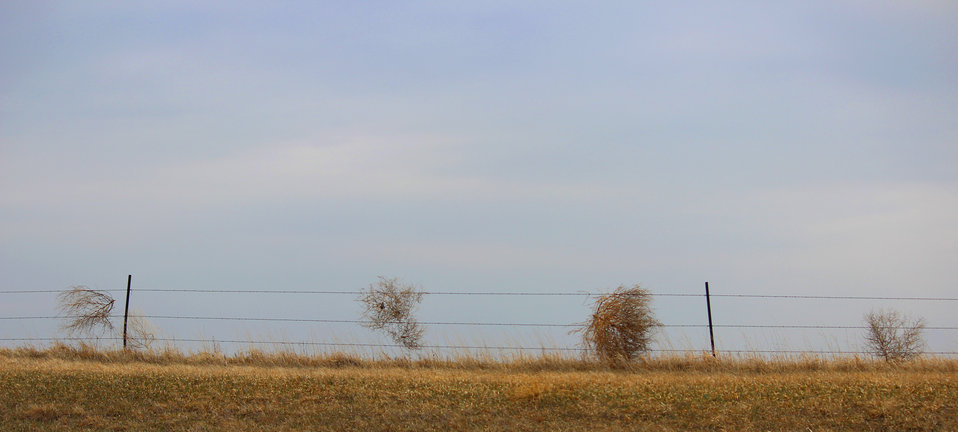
Trapped Tumbleweeds

These tumbleweeds (Kochia scoparia) were caught in a fenceline. Kochia is a major agricultural weed in the area. It's millions of seeds are scattered as the main plant detaches from the ground and rolls in the wind. This plant is highly adaptive and populations with resistance to several classes of pesticides (including glyphosate (Roundup)) are becoming more common in the area.